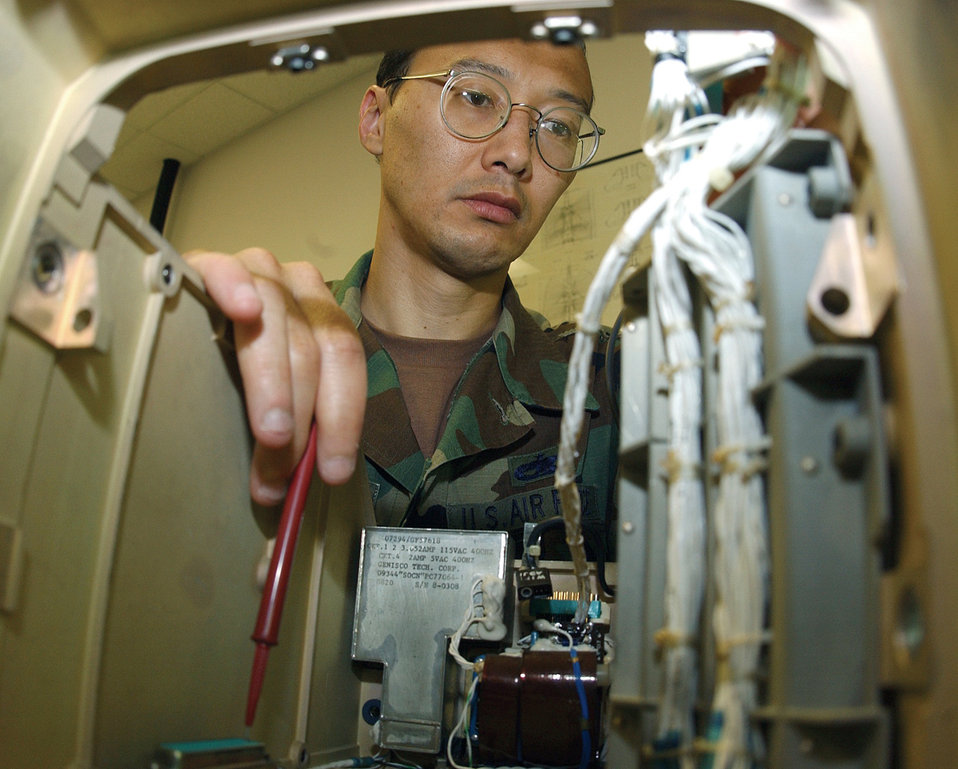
Airman cashes in on pair of IDEAs

SEYMOUR JOHNSON AIR FORCE BASE, N.C. -- Tech. Sgt. Mark Kobayashi, a circuit card repair technician, works on a multi-purpose display unit. His suggestion to repair these units and heads-up display units locally saved the Air Force more than $2.7 million, for which he was awarded $18,000. Sergeant Kobayashi is assigned to the 4th Maintenance Group here.